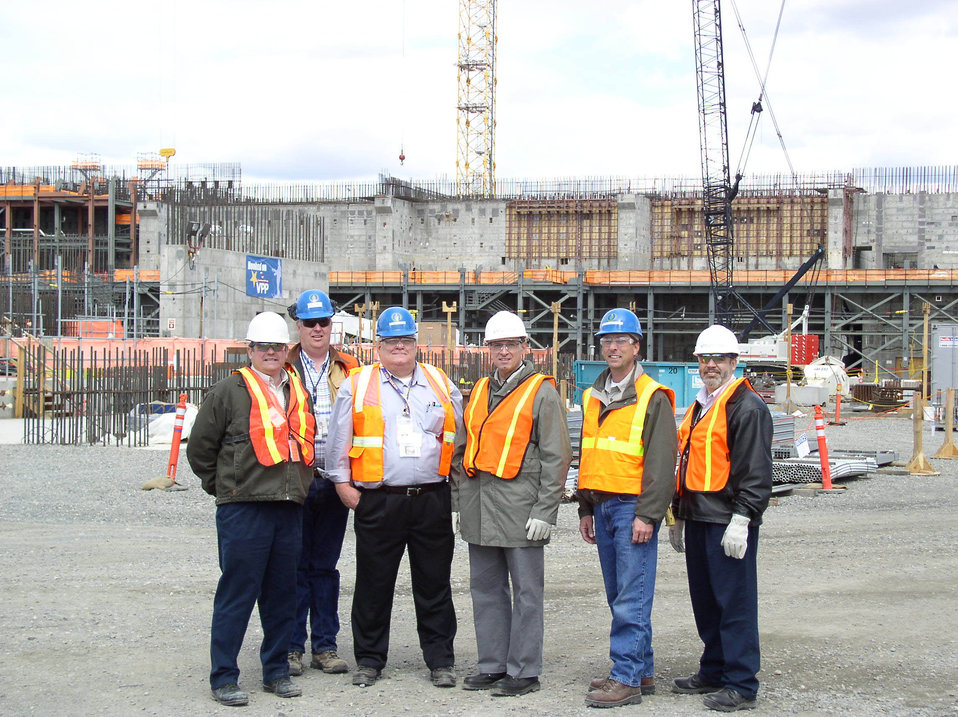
RISPOLI TOUR AT VIT PLANT 2008